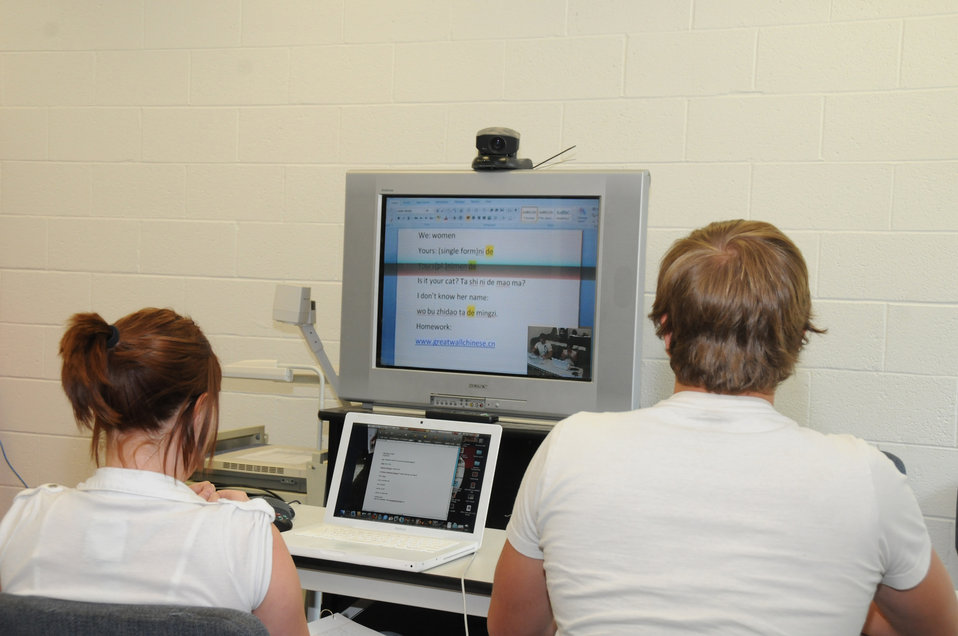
The students at Crescent High School in Crescent, Oklahoma are taking online courses in foreign languages, such as Chinese on August 9, 2009. The school received funding through the U. S. Department of Agriculture's (USDA) Rural Development (RD) Distance Learning and Telemedicine Program (DLT) allocated through the American Recovery and Reinvestment Act of 2009 (ARRA).